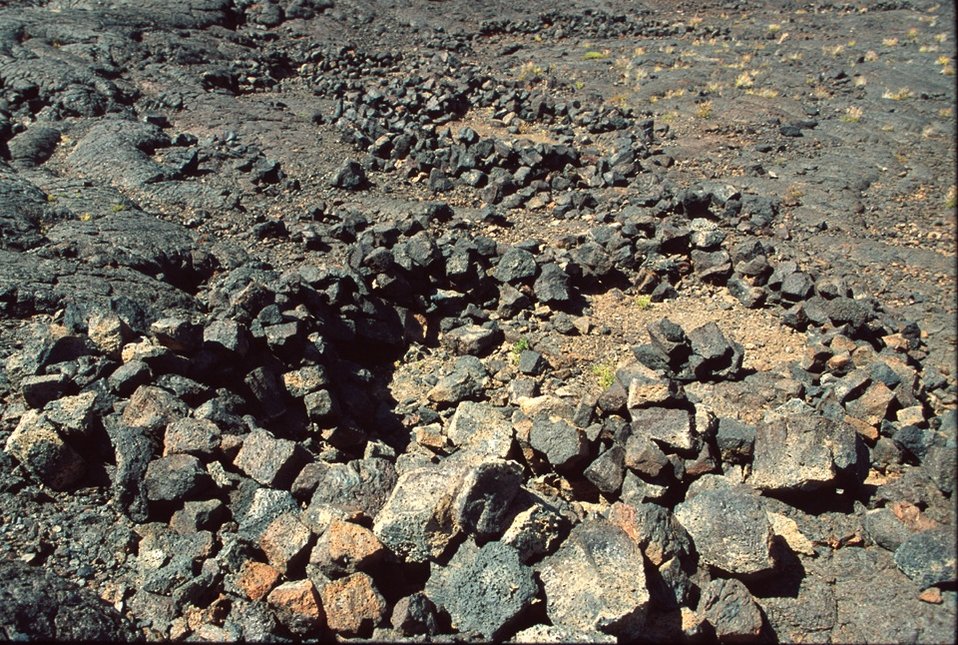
Shoshone Field Office USRD Upper Snake River District